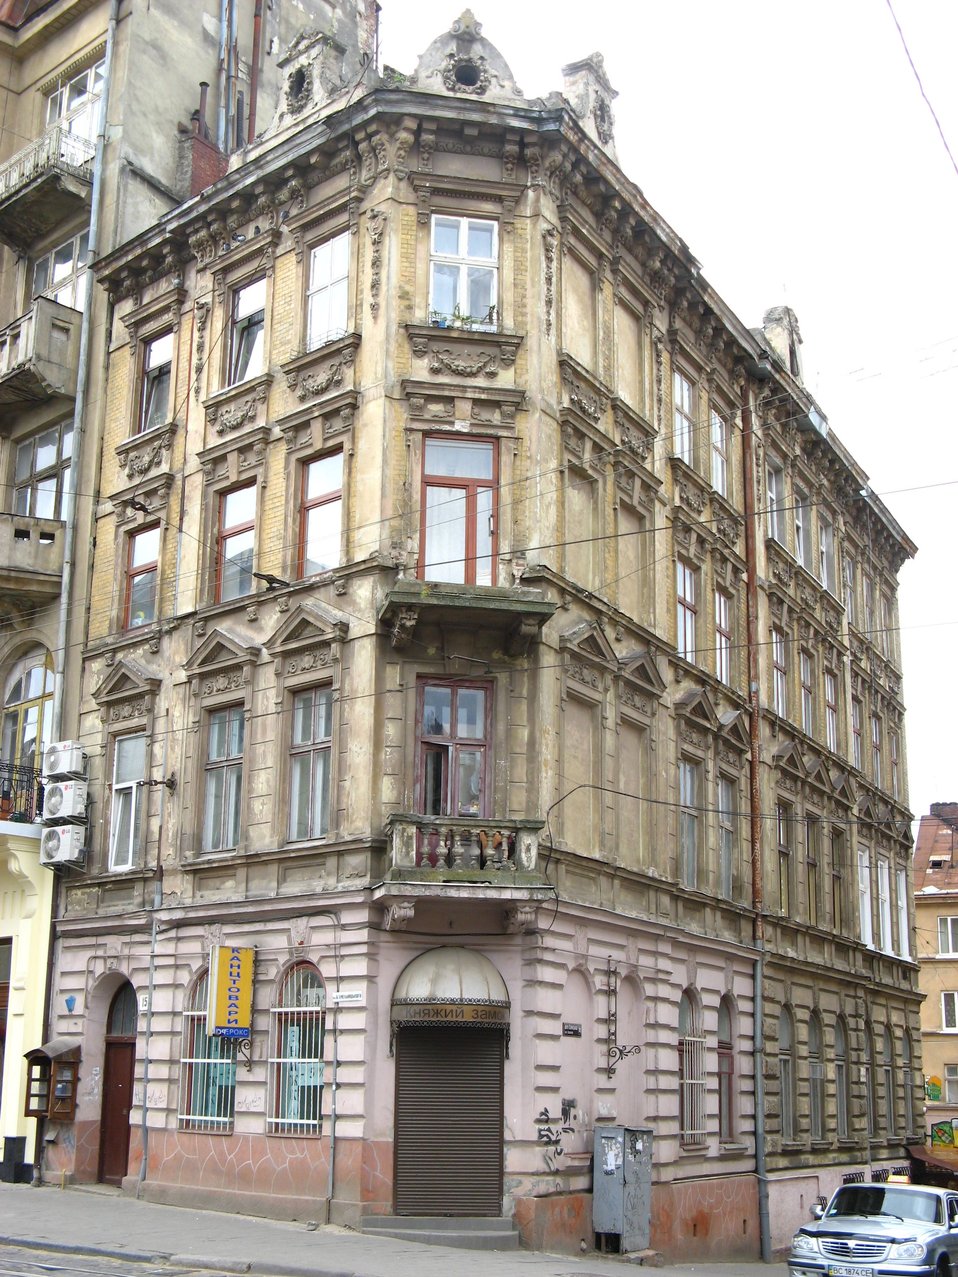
Українська: 15, вул. Б. Хмельницького (Львів)